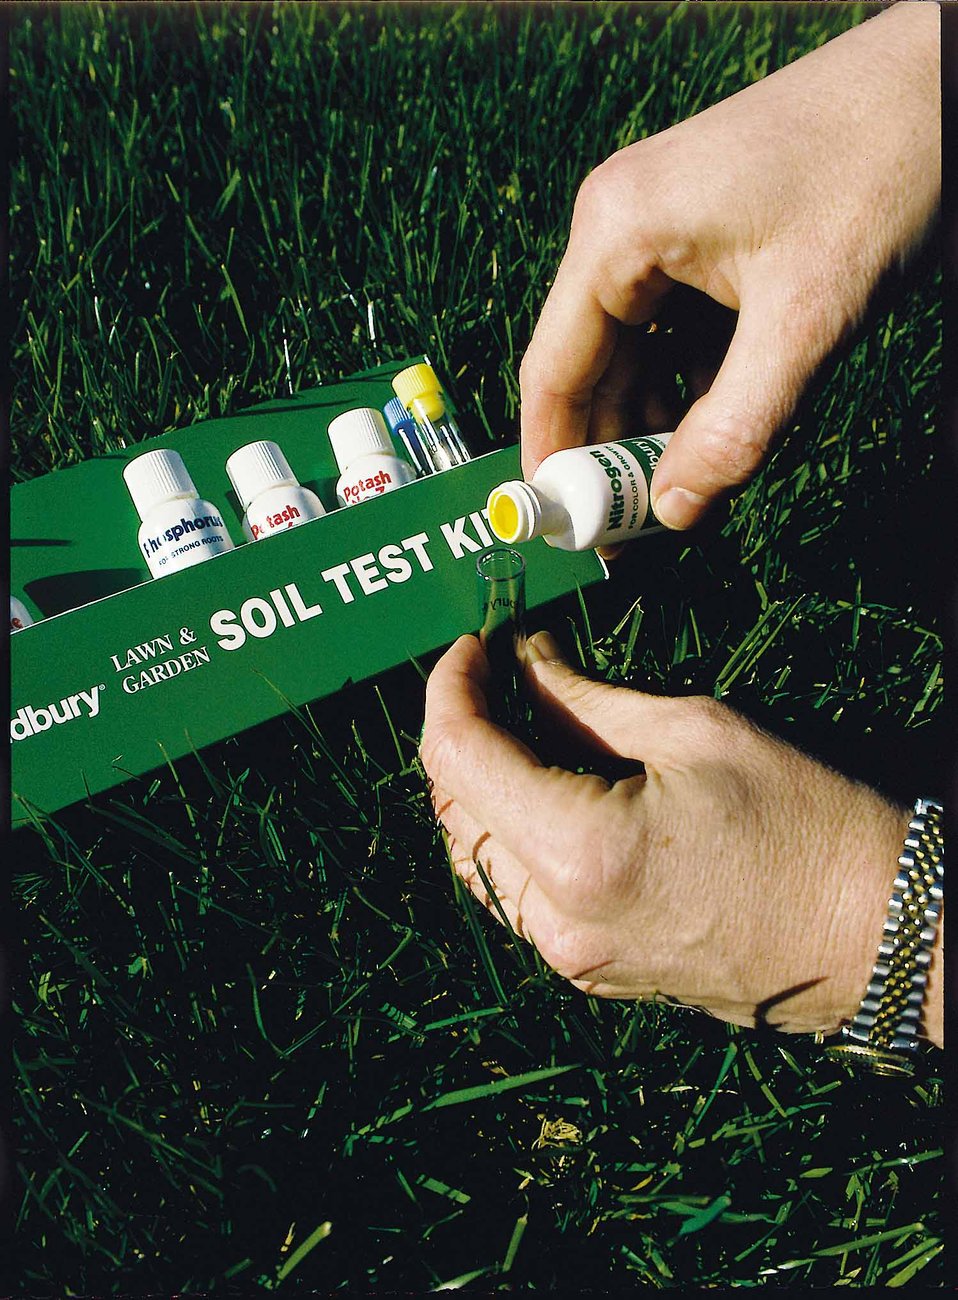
Homeowners are encouraged to test their soils for nutrient needs, and to apply only what nutrients are needed for a healthy lawn. Farmers practice the same testing procedure.